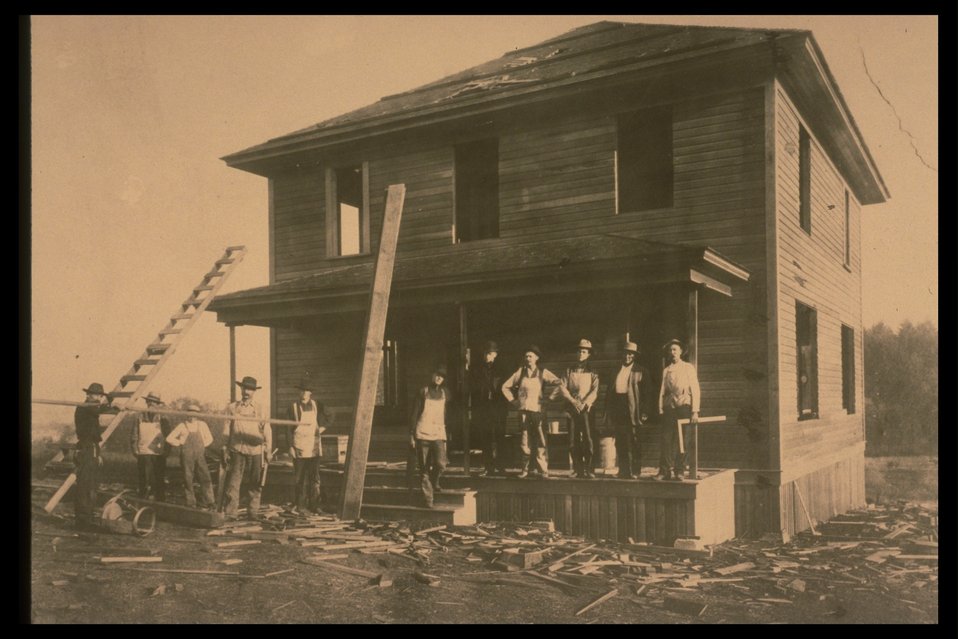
Black and White photo of an old homestead being built with wood.